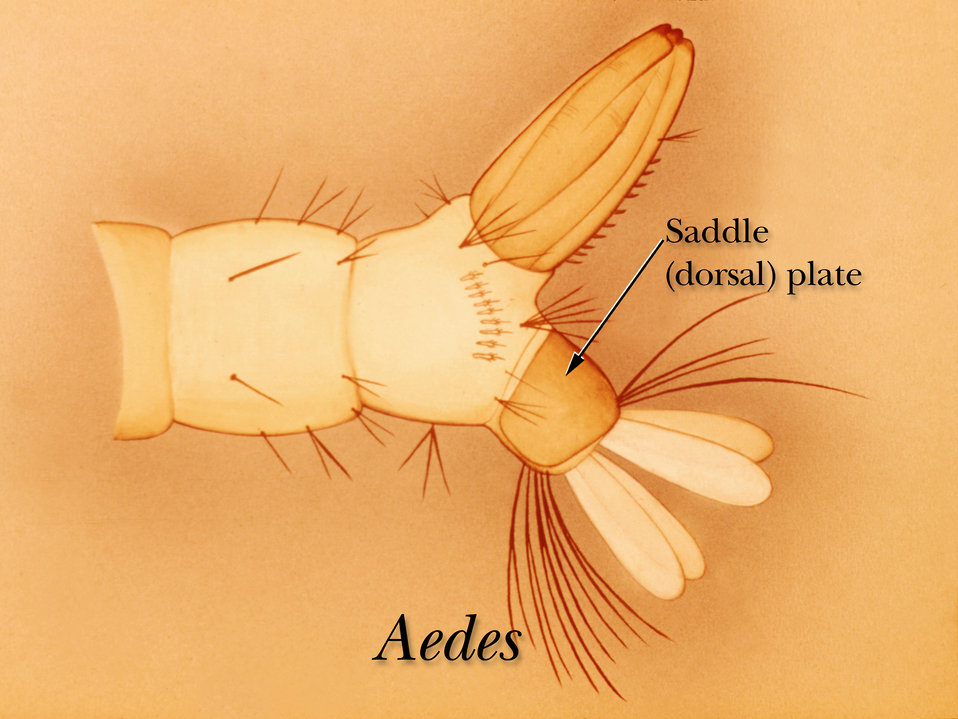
An illustration identifying the dorsal plate on the terminal segment of an Aedes mosquito larva